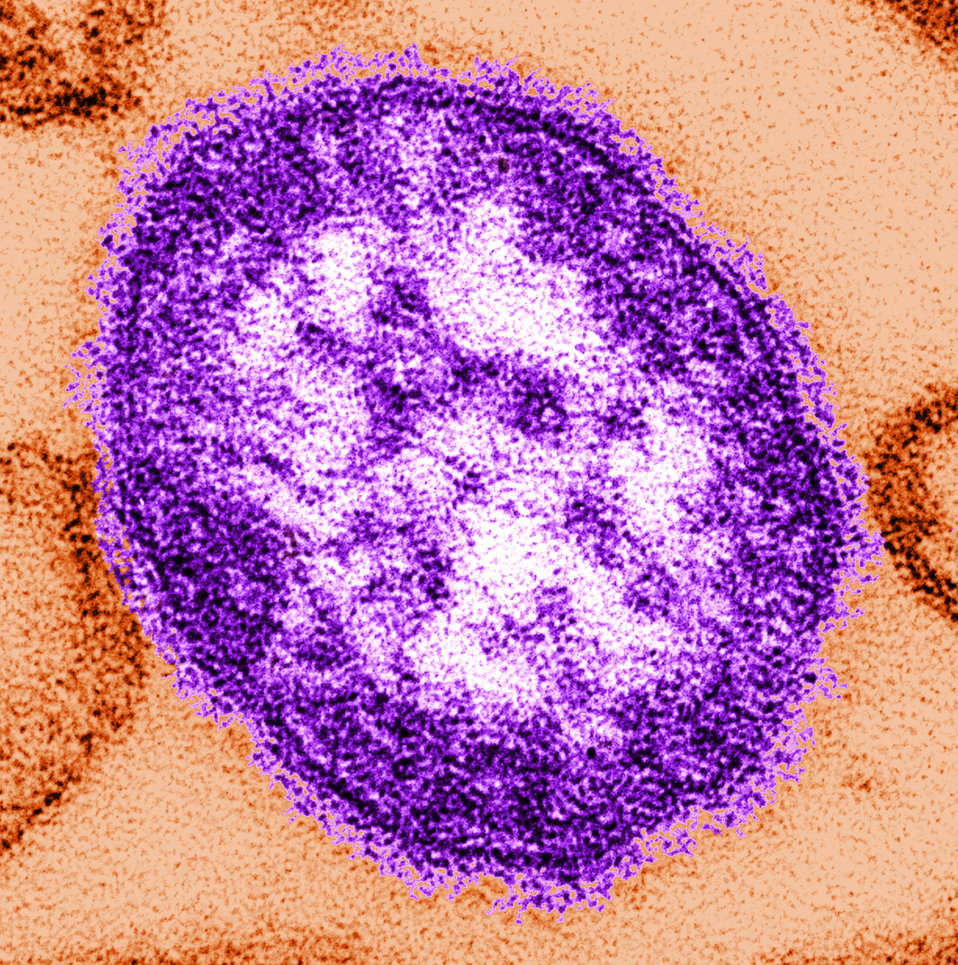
This thin-section transmission electron micrograph (TEM) revealed the ultrastructural appearance of a single virus particle, or 'virion', of measles virus. The measles virus is a paramyxovirus, of the genus Morbillivirus. It is 100-200 nm in diameter, with a core of single-stranded RNA, and is closely related to the Rinderpest and canine distemper viruses. Two membrane envelope proteins are important in pathogenesis. They are the F (fusion) protein, which is responsible for fusion of virus and host cell membranes, viral penetration, and hemolysis, and the H (hemagglutinin) protein, which is responsible for adsorption of virus to cells.There is only one antigenic type of measles virus. Although studies have documented changes in the H glycoprotein, these changes do not appear to be epidemiologically important (i.e., no change in vaccine efficacy has been observed). See PHIL 8429 for a black and white version of this image.